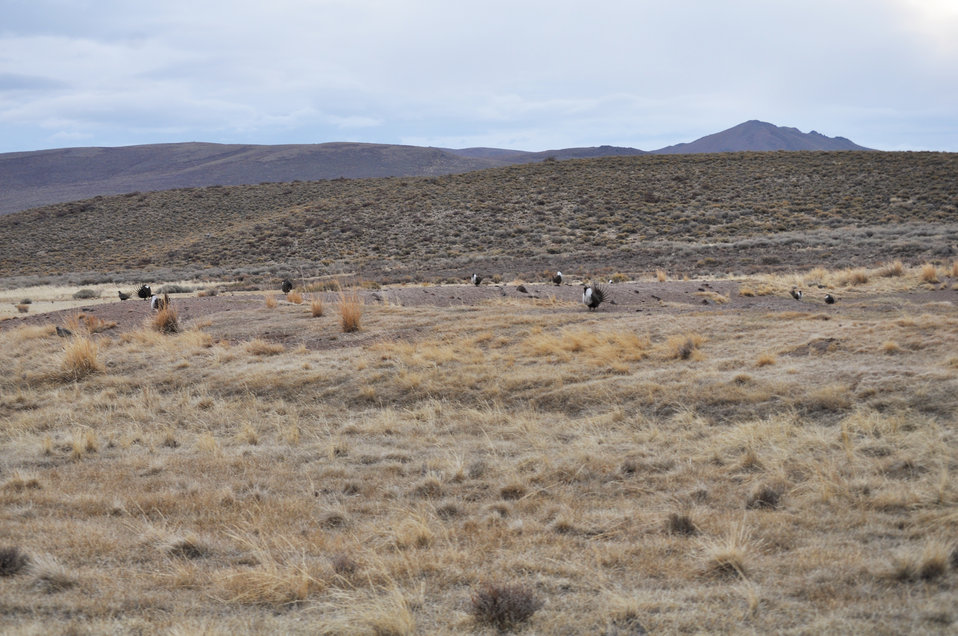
Greater sage-grouse lek near Bodie, California.